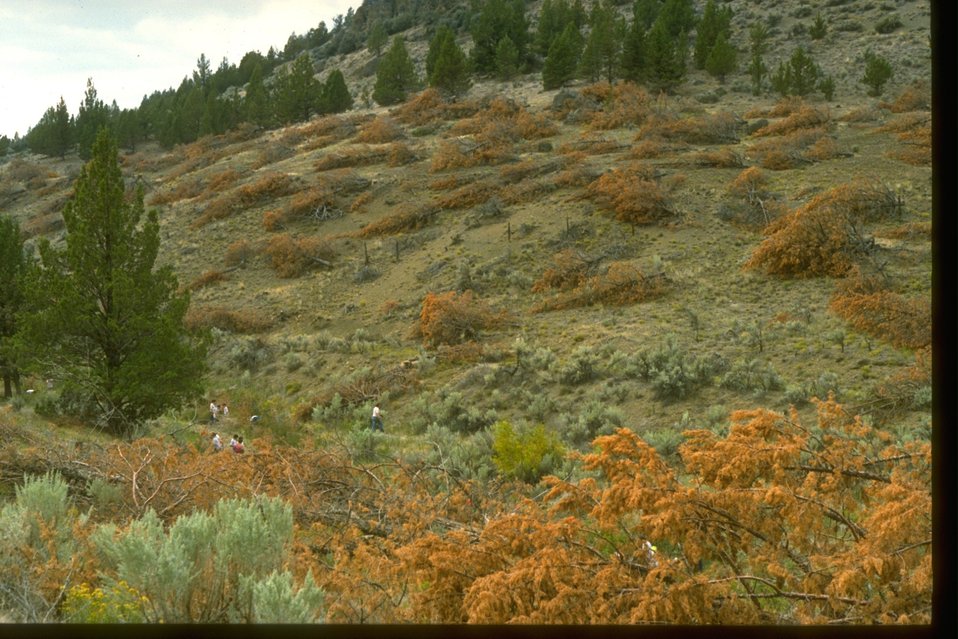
Juniper control on private land near Waterman Flat in central Oregon.